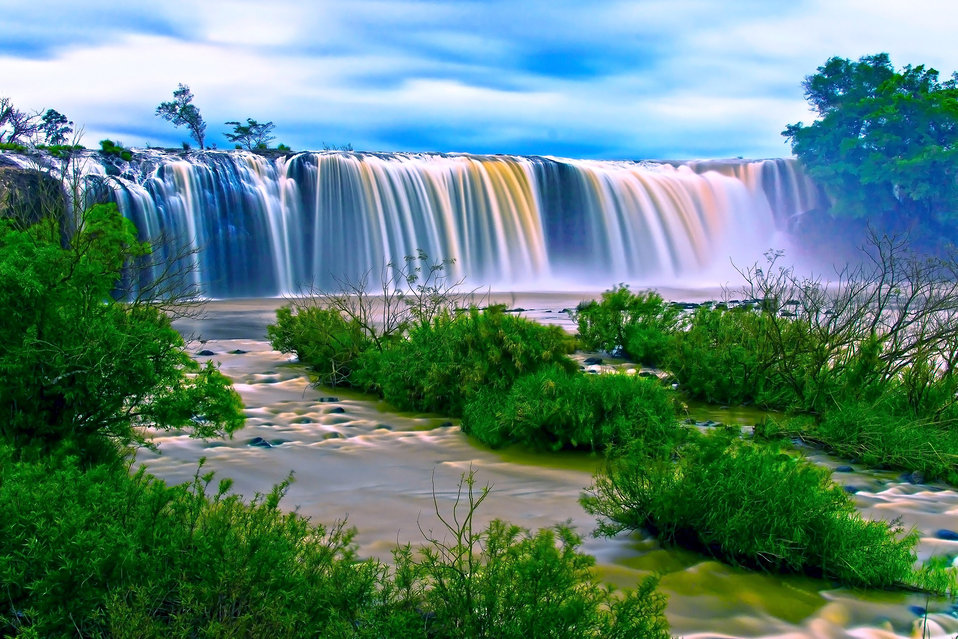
Waterfall

Dray nur water fall in the buon me thuot province, vietnam.